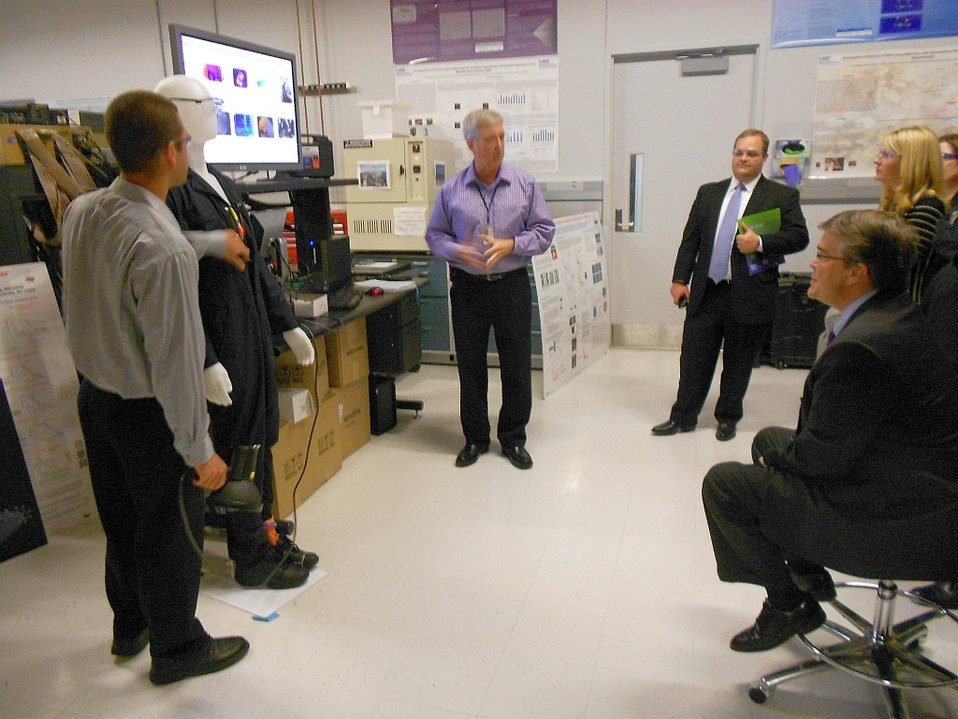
U.S. Representative Culberson Visit

Greg Gillen (center) and Matthew Staymates (left) of NIST’s Material Measurement Laboratory brief U.S. Representative John Culberson of Texas (seated right) and his legislative staff on NIST measurement research to improve trace explosive detection technology.